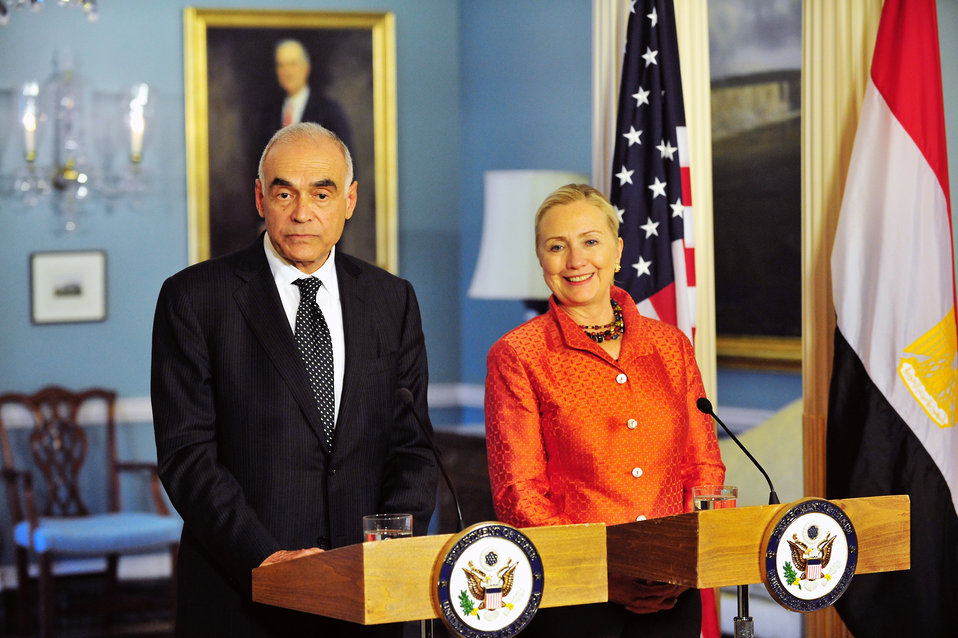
Secretary Clinton and Egyptian Foreign Minister Mohamed Kamel Amr Respond to Questions

U.S. Secretary of State Hillary Rodham Clinton and Egyptian Foreign Affairs Minister Mohamed Kamel Amr respond to questions during their joint press conference at the U.S. Department of State in Washington, D.C., in September 28, 2011.